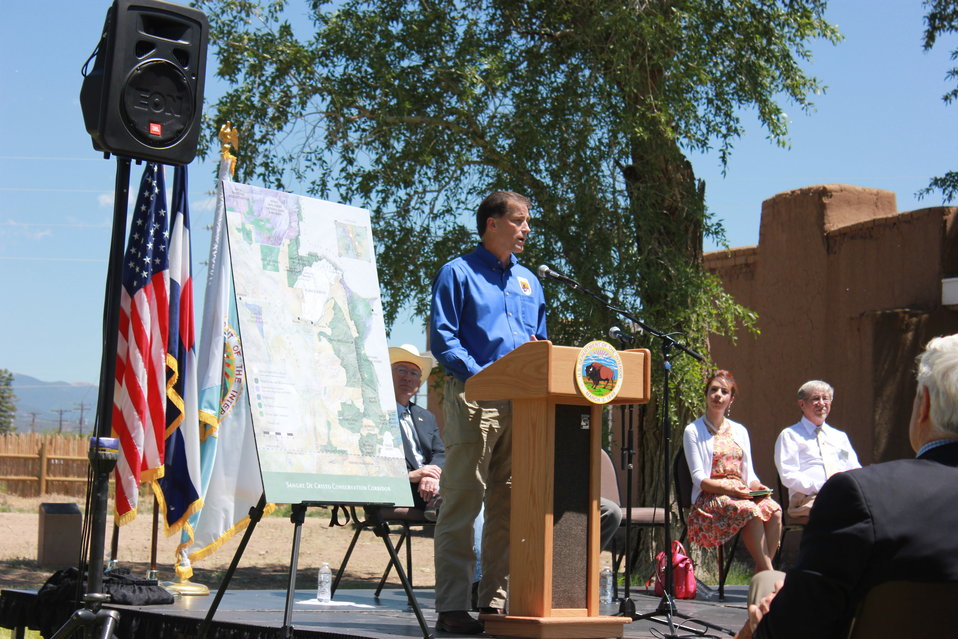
Historic Conservation Easement in Sangre de Cristo Mountains